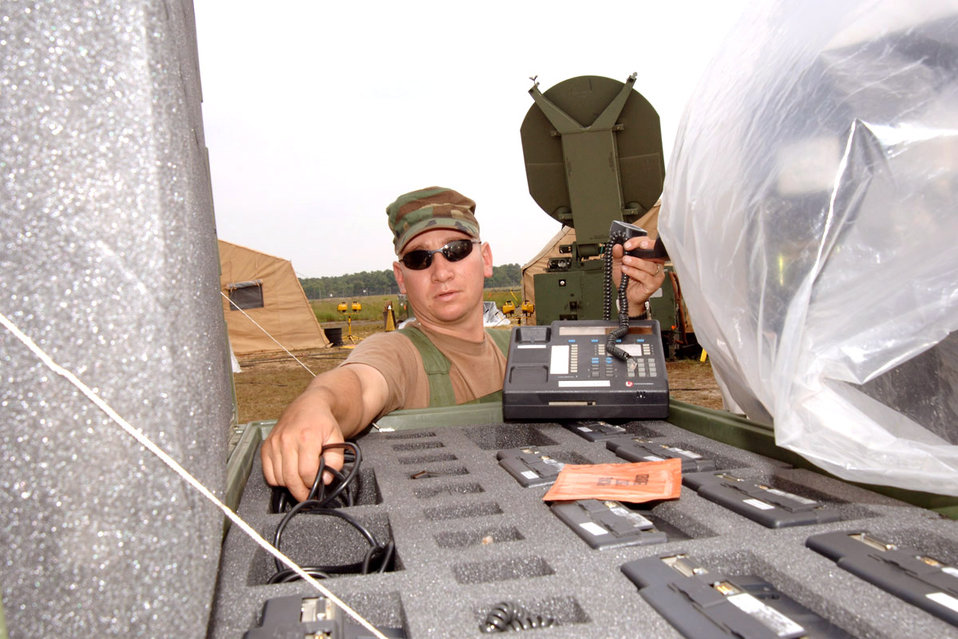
Settin' up

LAKEHURST, N.J. -- Senior Airman Chris Elkins unloads a secure phone from a pallet for the wing operation center while deployed to Eagle Flag, an air and space expeditionary force support exercise. The goal of the exercise is to test Airmen's ability to establish an air base at a forward-deployed location. Airman Elkins is assigned to the 355th Communications Squadron at Davis-Monthan Air Force Base, Ariz.